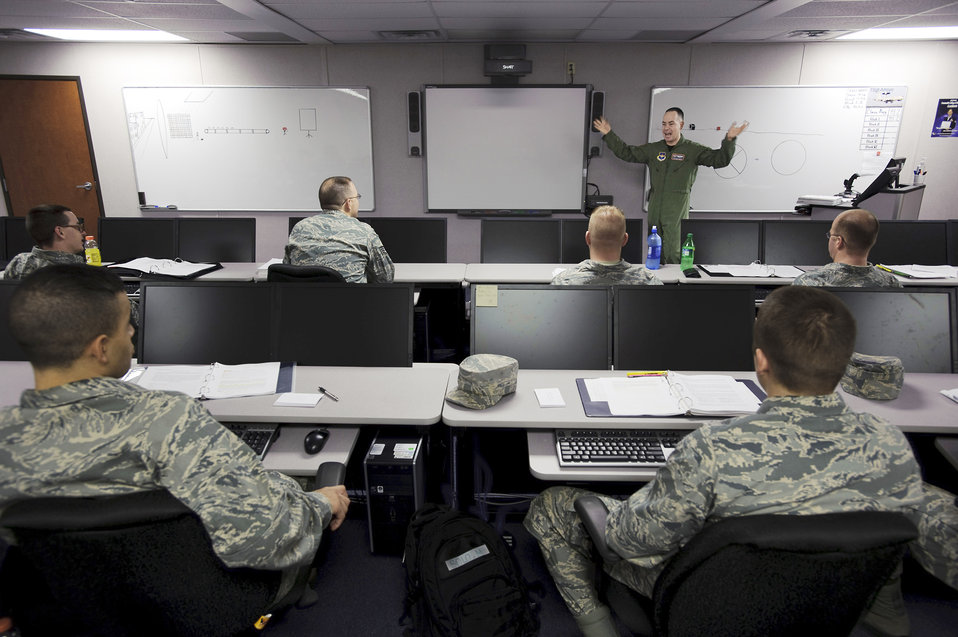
First group of BMT graduates begin sensor operator technical school

Tech. Sgt. Michael Arroyo reviews the previous day's lesson on the electromagnetic spectrum with a class of eight nonprior service students and six prior service students during phase one of the Basic Sensor Operator Course Jan. 20, 2010 at Randolph Air Force Base, Texas. Sergeant Arroyo is a 12th Operations Group Remotely Piloted Aircraft sensor operator instructor.